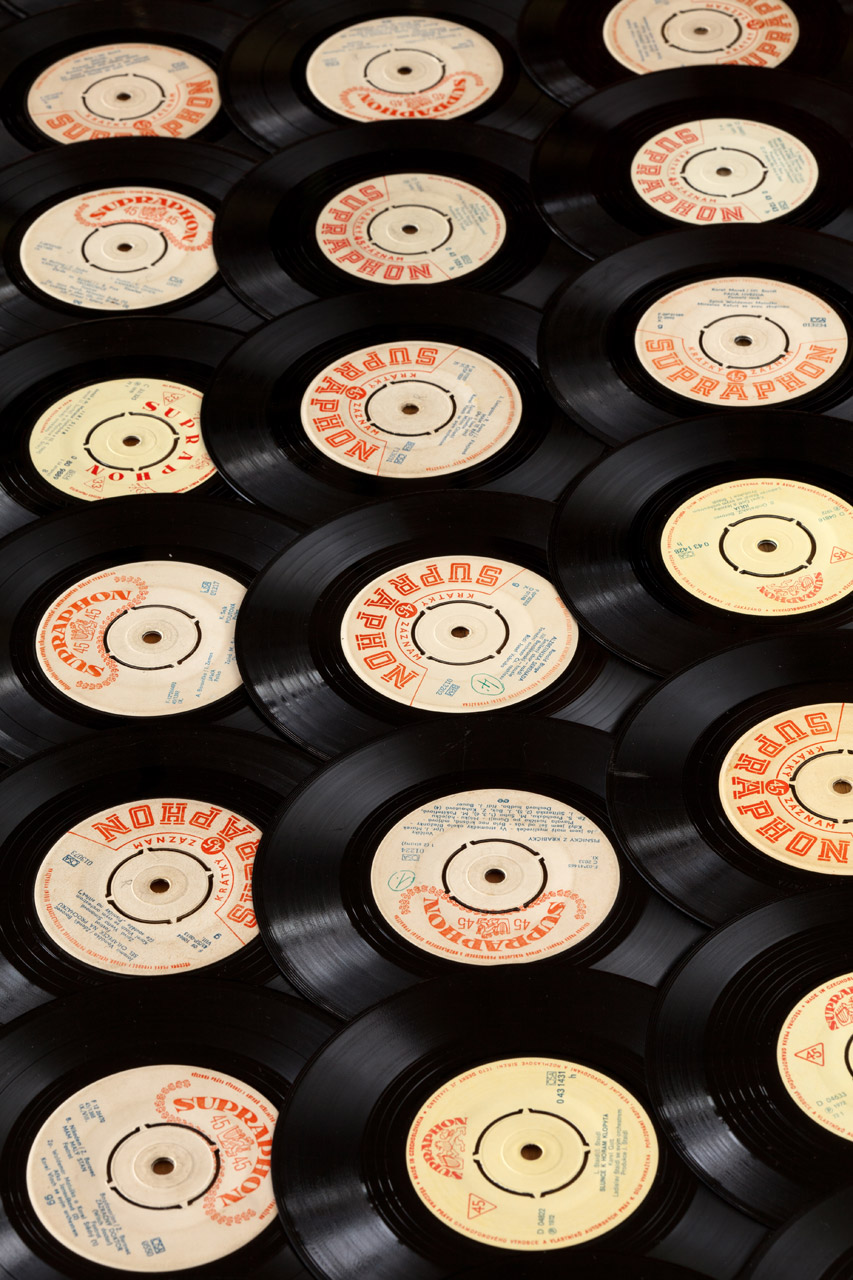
Vinyl records

Black gramophone records background photo.